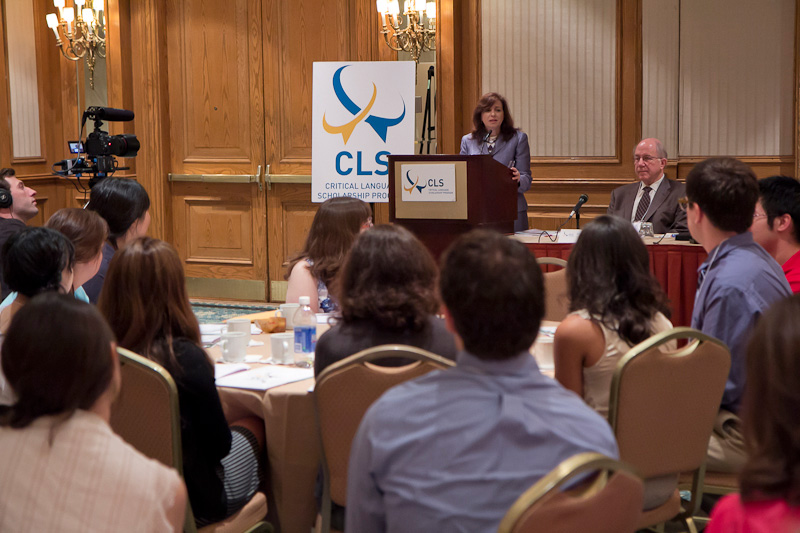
Under Secretary Sonenshine Speaks to Critical Language Scholarship Students

Under Secretary of State for Public Diplomacy and Public Affairs Tara Sonenshine speaks with Critical Language Scholarship (CLS) students in Washington, D.C., June 20, 2012.